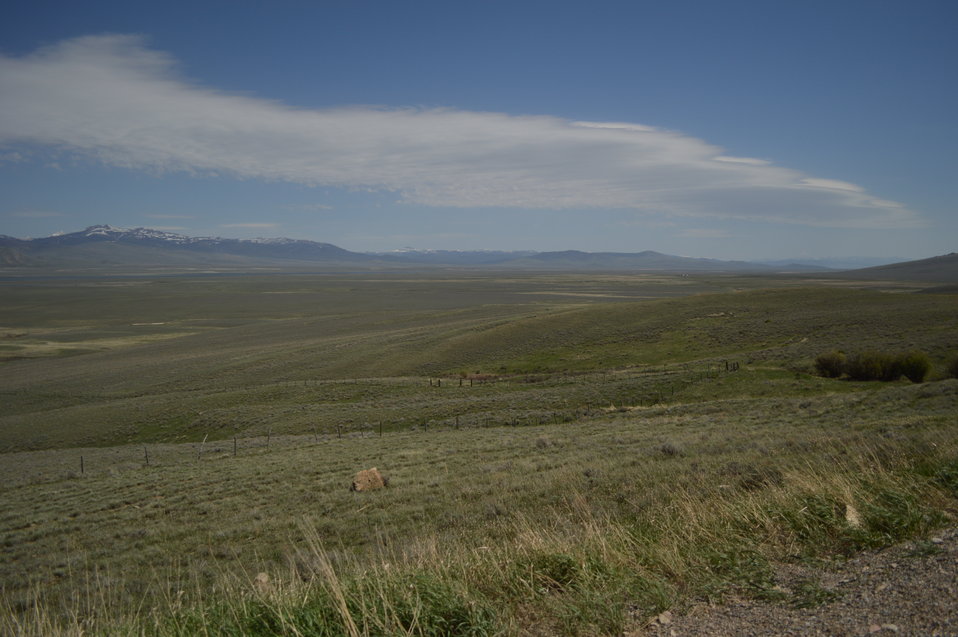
Regional Leadership Visit to Montana 2014